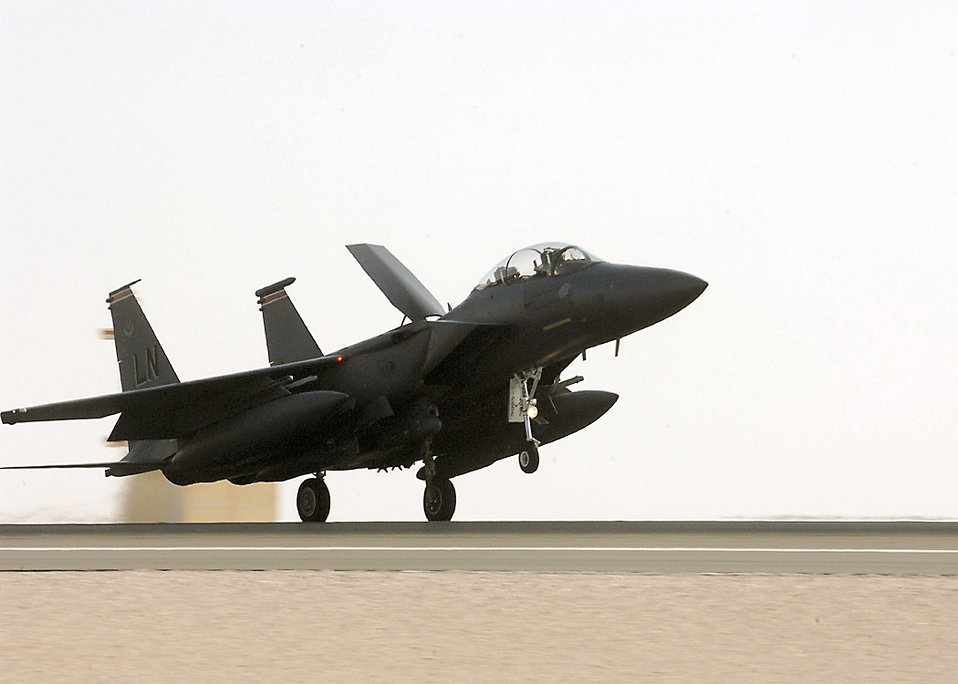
F-15Es provide overwatch

An F-15E Strike Eagle touches down after a mission in Southwest Asia. Strike Eagles provide overwatch and perform shows of force to deter enemy activity and protect coalition forces.